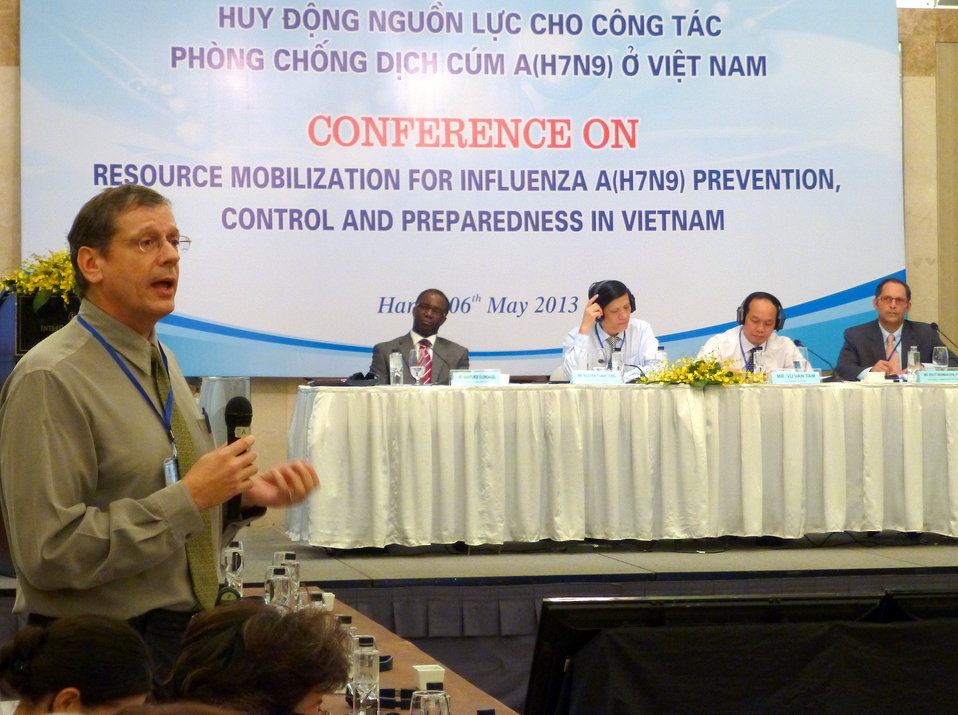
Dr. Tim Meinke, USAID, speaks at the Conference on Resource Mobilization for Influenza A (H7N9) Prevention, Control and Preparedness in Vietnam

Hanoi, May 6, 2013
Supported by USAID Vietnam